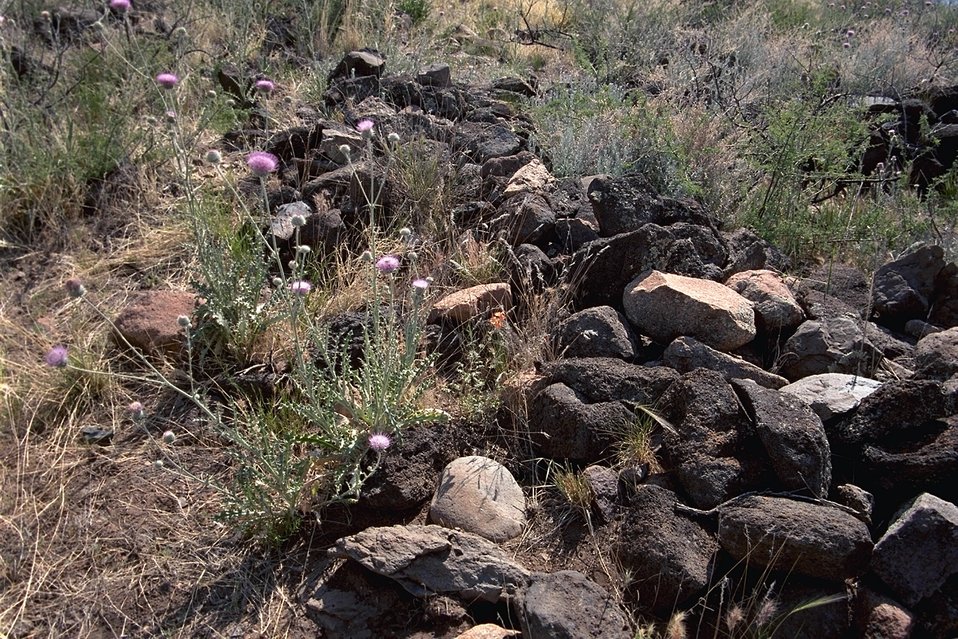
A trail of rocks with wildflowers around it.